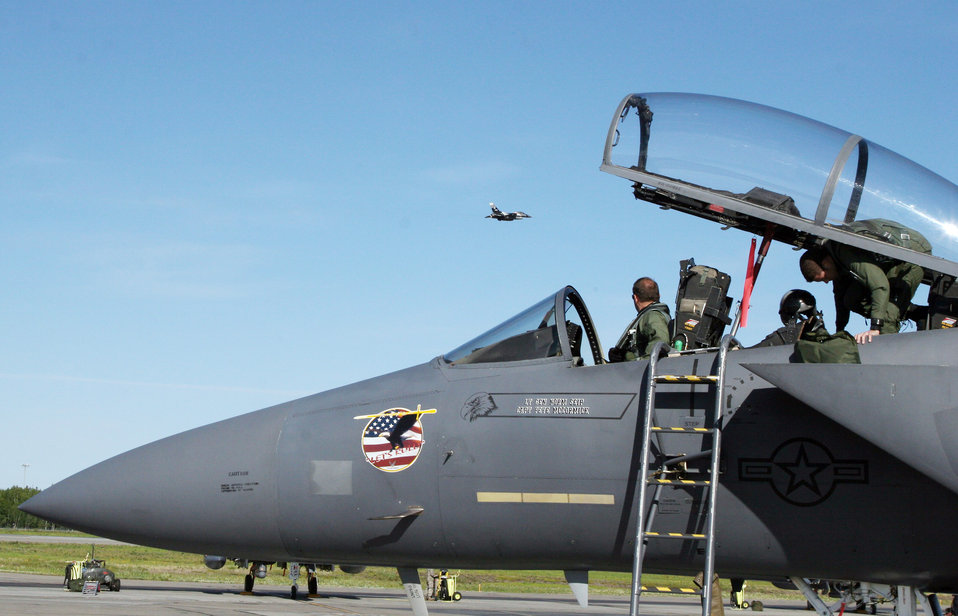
Exercise Northern Edge 2009 kicks into high gear

An F-15E Strike Eagle from Mountain Home Air Force Base, Idaho, prepares for takeoff at Eielson AFB, Alaska, June 16 as an F-16 Fighting Falcon passes by. The aircraft are participating in Exercise Northern Edge 2009.